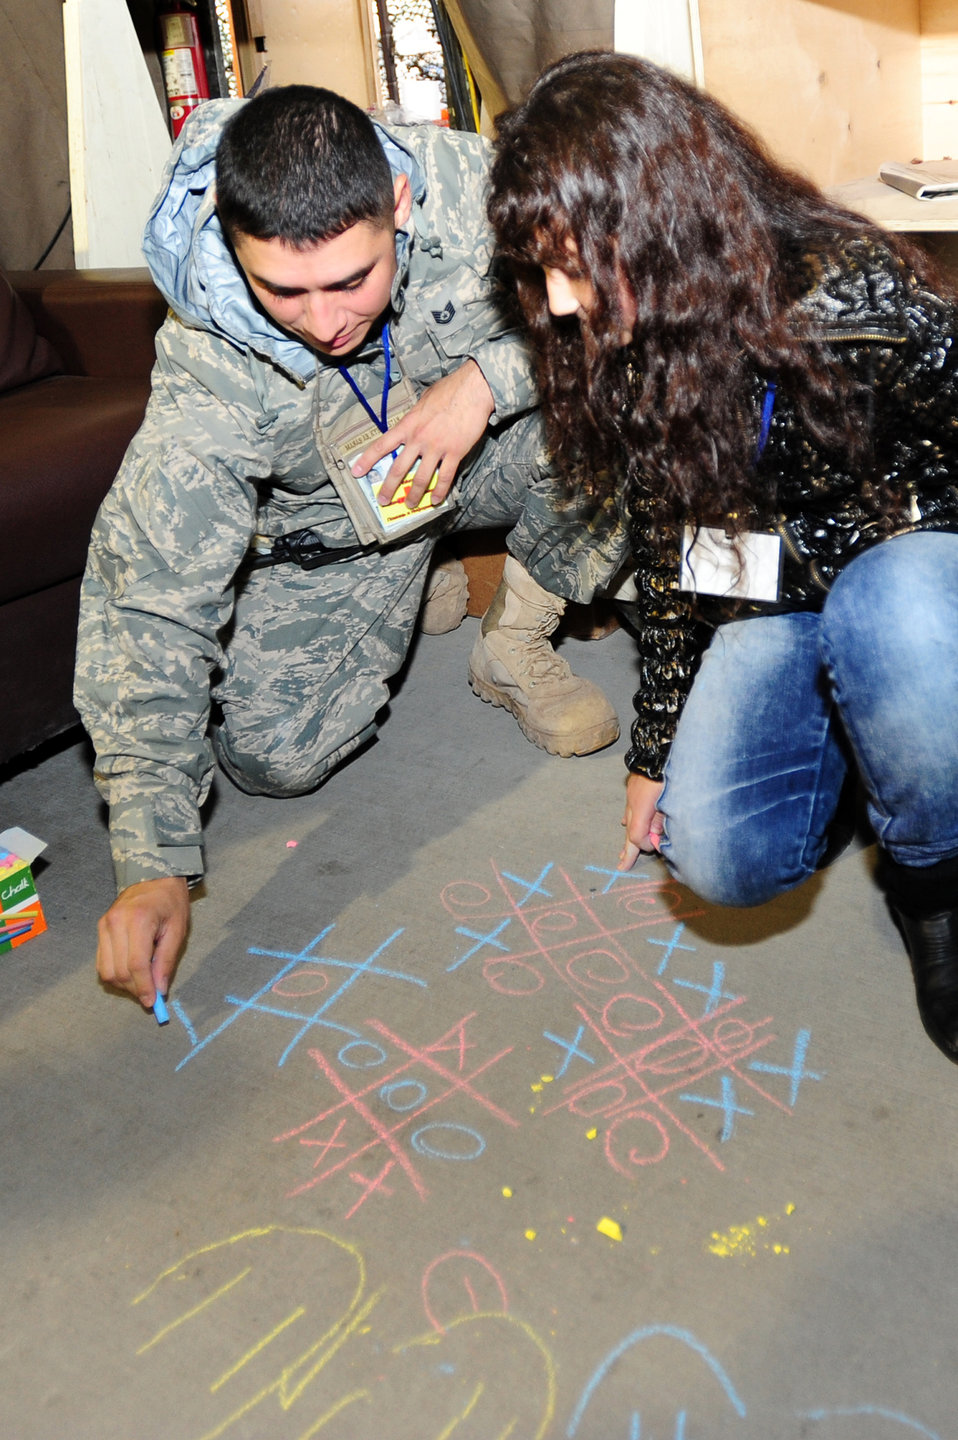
Airmen host Kyrgyz citizens during family day

Tech. Sgt. Marcos Rodriguez plays tic-tac-toe with a Kyrgyz girl during Kyrgyz Friends and Family Day Oct. 9, 2009, at the Transit Center at Manas, Kyrgyzstan. The event strengthened friendships between the U.S. military and the local community. Sergeant Rodriguez is assigned to the 376th Expeditionary Security Forces Squadron.